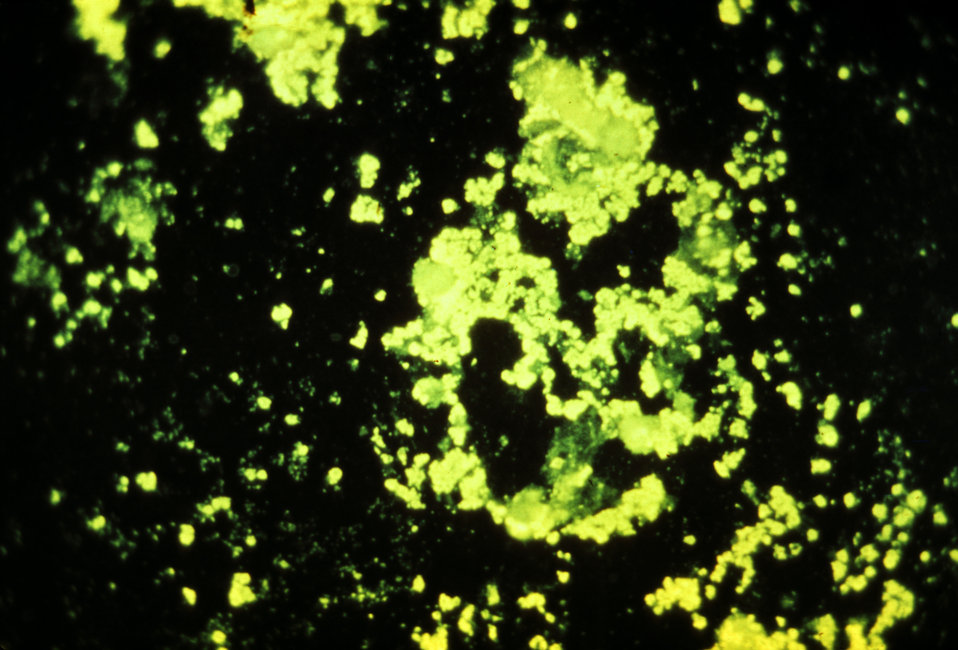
Fluorescent antibody stain of Yersinia pestis.